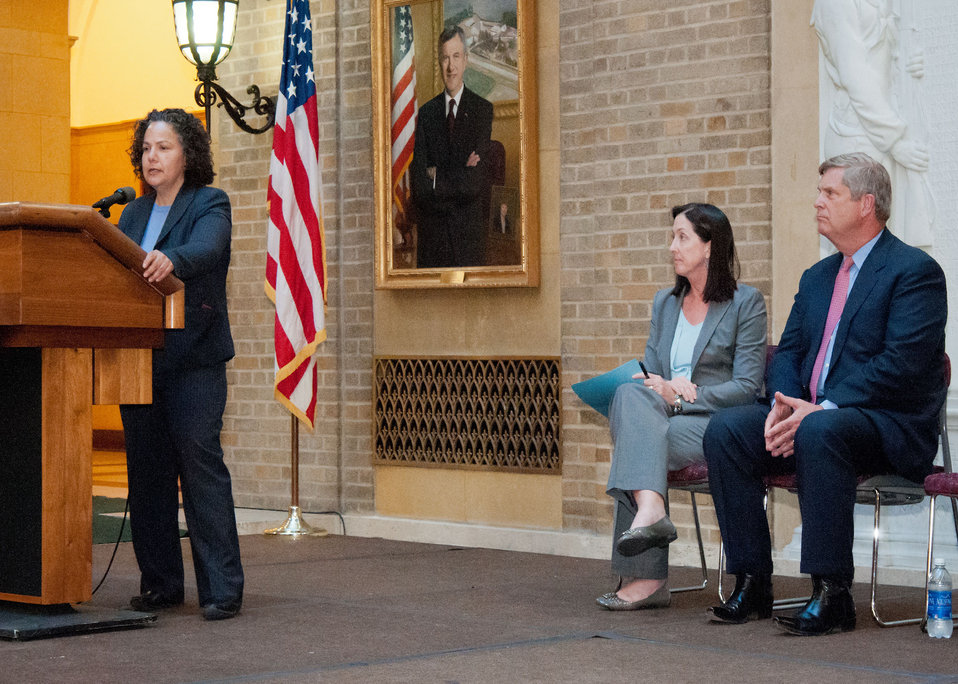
Nancy Sutley, Chair of the White House Council on Environmental Quality spoke at the Chimney Rock National Monument Dedication Celebration held at the United States Department of Agriculture in Washington, D.C., on Monday, Sept. 24, 2012. Mary Wagner, Associate Chief, U.S. Forest Service and Agriculture Secretary Tom Vilsack listen to Sutley’s remarks. President Barack Obama designated Chimney Rock in the San Juan National Forest in Southwest Colorado as a national monument on Friday, Sept. 21, 2012. A move that will help preserve 4,726 acres in southwestern Colorado surrounded by the Southern Ute Indian Reservation. The land will be managed by the U.S. Department of Agriculture Forest Service with assistance from local tribes. Chimney Rock was home to the Pueblo People 1,000 years ago and is culturally significant for Native American tribes.